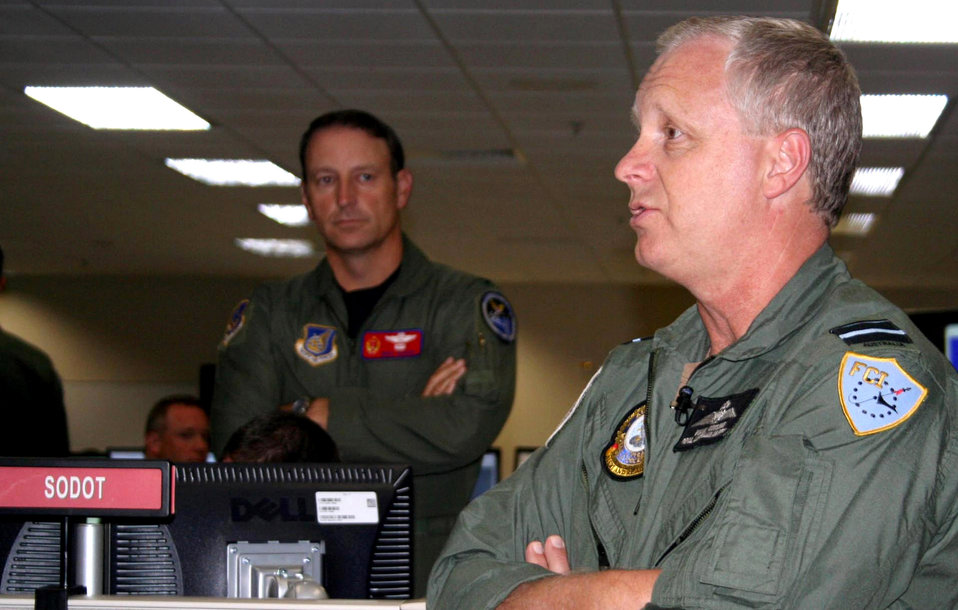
Exercise brings Australian, U.S. forces together

Royal Australian Air Force Air Vice Marshall Mark Binskin briefs the staff on the operations floor of the 613th Air and Space Operations Center May 24 during Exercise Talisman Saber while Col. Mike Boera listens. Air Vice Marshall Binskin was the Combined Forces Air Component Comannder for the exercise, with Colonel Boera his deputy CFACC. Colonel Boera is the 613th Air and Space Operations Center commander.